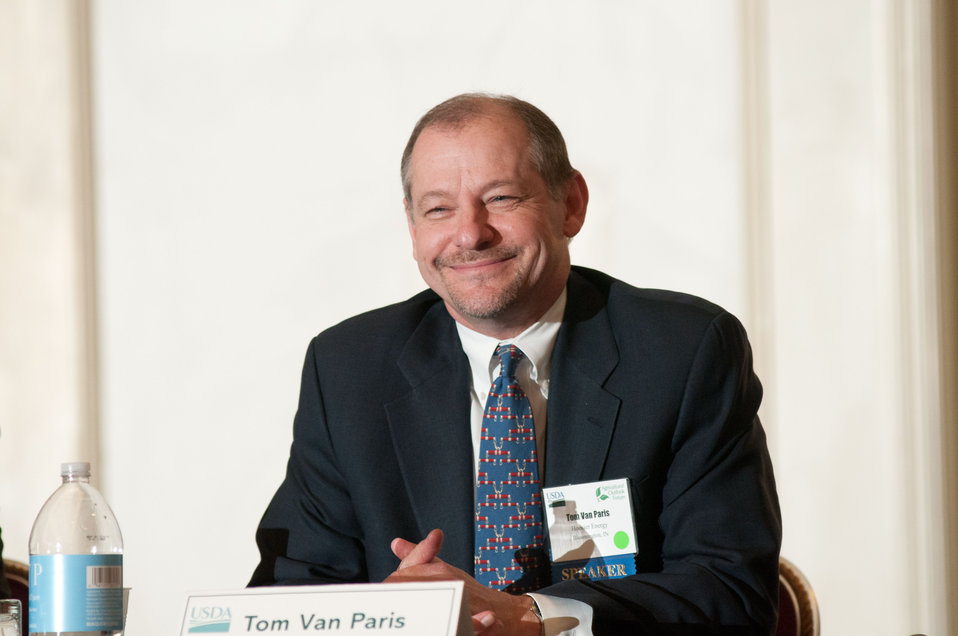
Hoosier Energy Member Services and Communications Vice President Tom Van Paris, of Bloomington, Indiana speaks on the topic; Blueprint for a Successful Energy Efficiency Program in Rural Communities, during the Energizing Rural Economies breakout session of the U.S. Department of Agriculture (USDA) 2013 Agricultural Outlook Forum held at the Crystal Gateway Marriott Hotel in Arlington, VA on Friday, Feb. 22, 2013. The panel discussed the expanding capital available for rural investments that helps deliver the tools and technologies to meet energy, telecommunications, and business needs to help the rural economy to grow. Rural Development programs and services can help rural consumers increase productivity, efficiency, and innovation, which can expand domestic an foreign markets, reduce costs, and help diversify and strengthen rural economies.